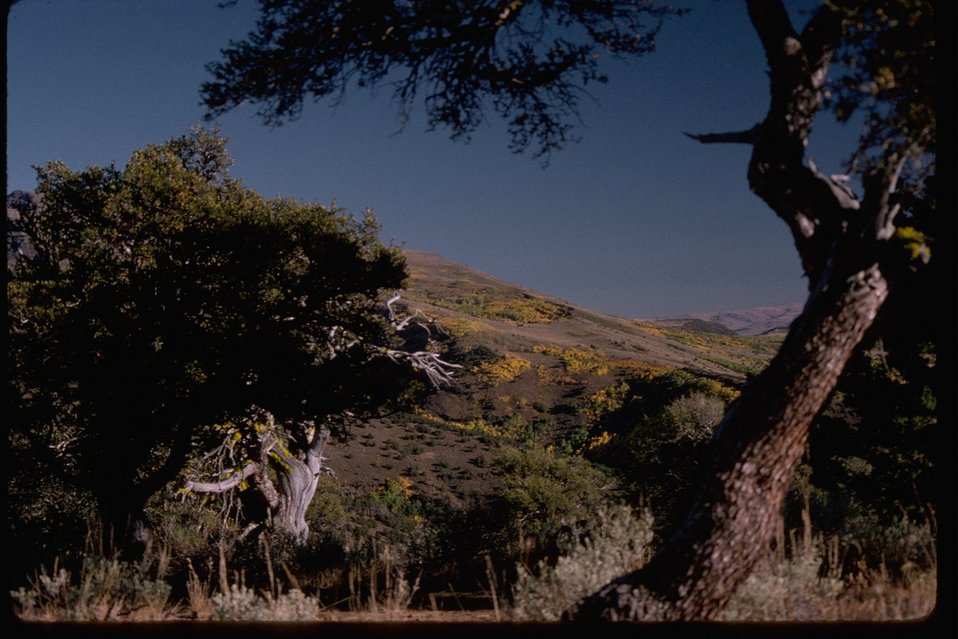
Fall colors in Little Indian Creek area from Rooster Comb area at Steens Mountain.